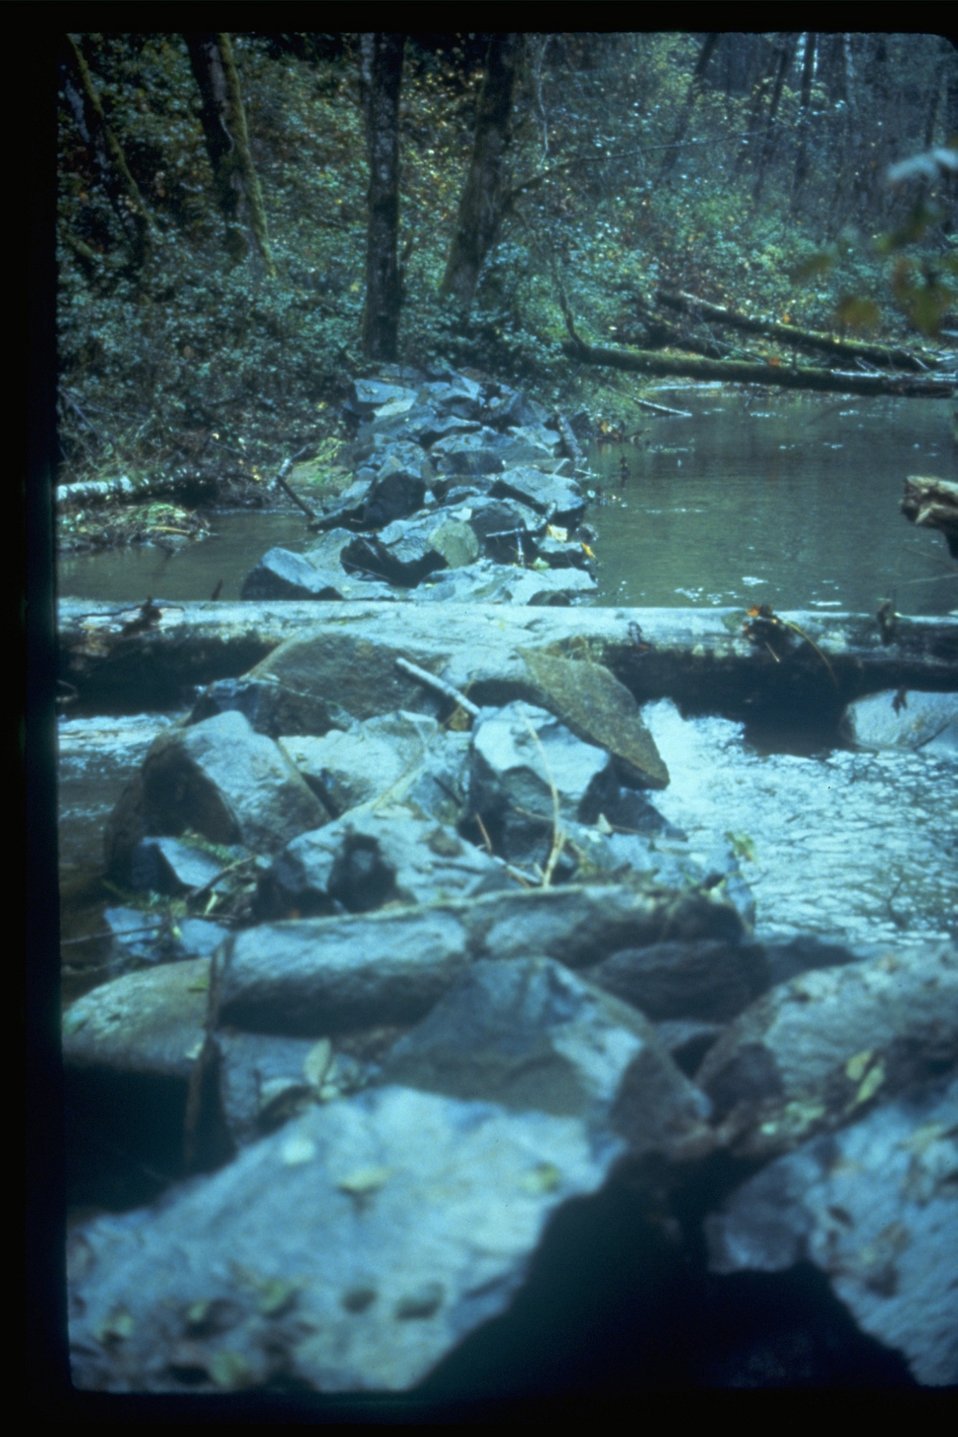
Rock weir in a stream.